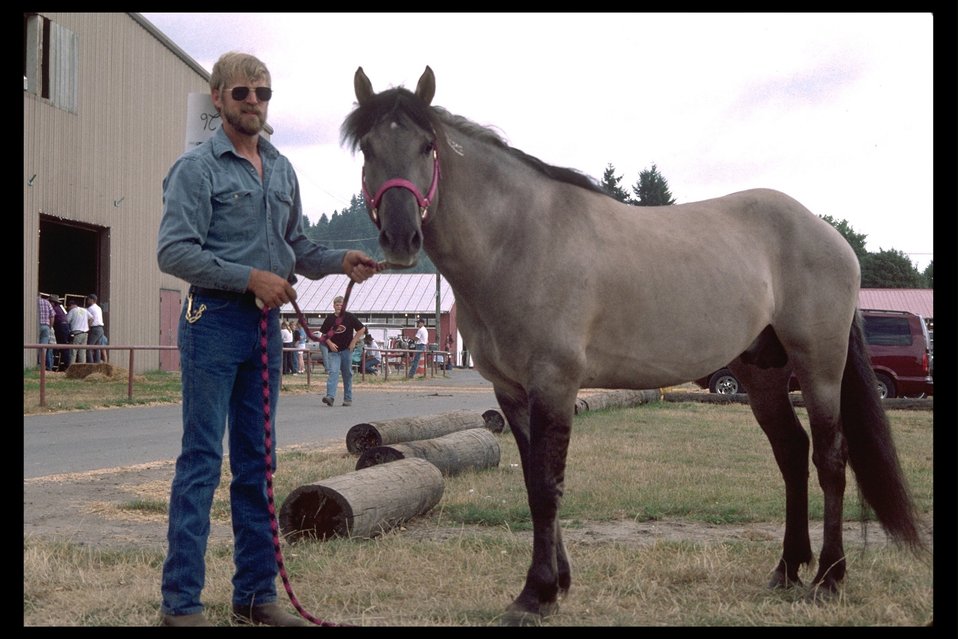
Fred Robbins is a proud adopter of Kiger mustang in Longview, Washington.